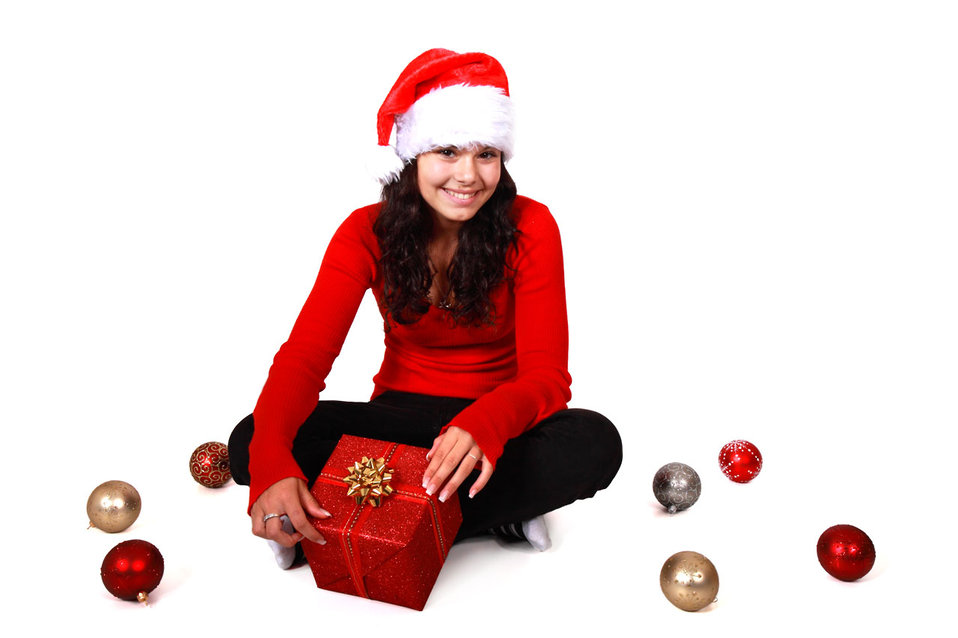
Christmas girl with hat sitting isolated on white background.